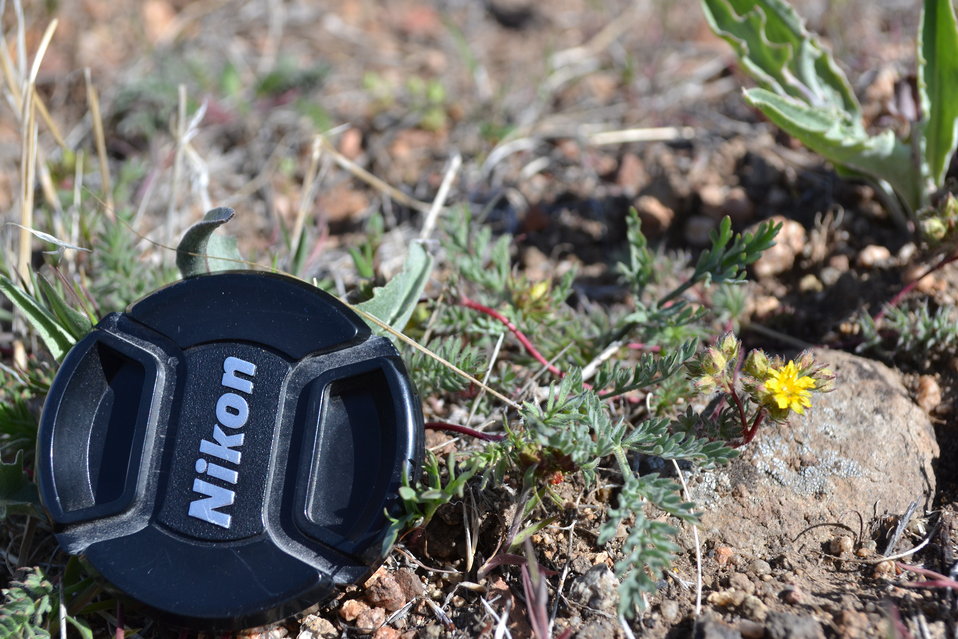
Webber's ivesia

Webber’s ivesia is restricted to sites with sparse vegetation and shallow, rocky, clay soils on mid elevation flats, benches or terraces between 4,475 and 6,237 feet elevation in Washoe and Douglas Counties in Nevada, and in Lassen, Plumas and Sierra Counties, in California.